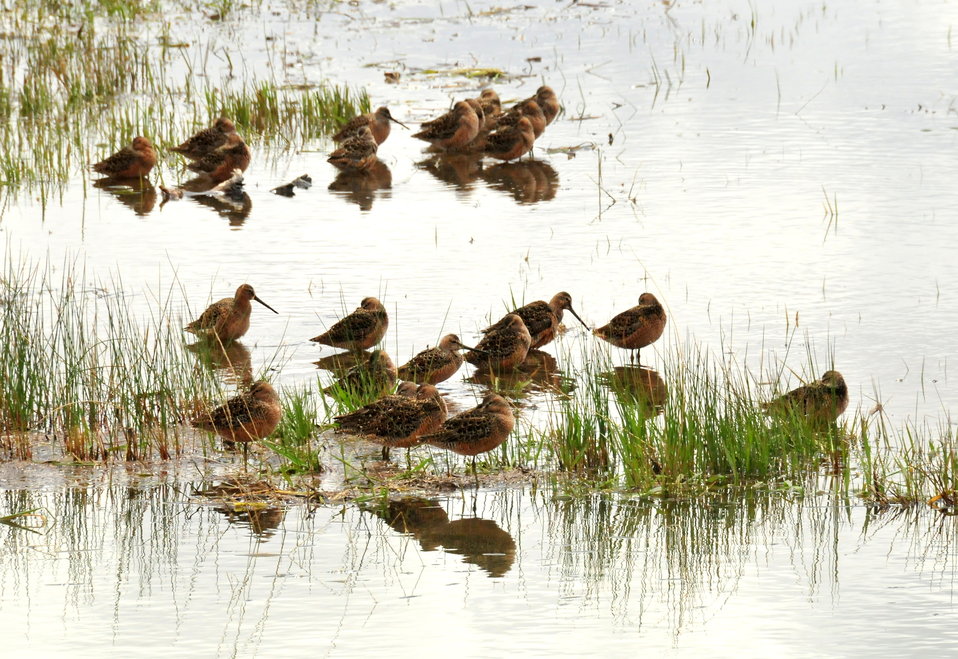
Long billed dowitchers resting on Seedskadee NWR during their spring migration. National Wildlife Refuges provide opportunities for long distance migrants to feed and rest before continuing their arduous journey.